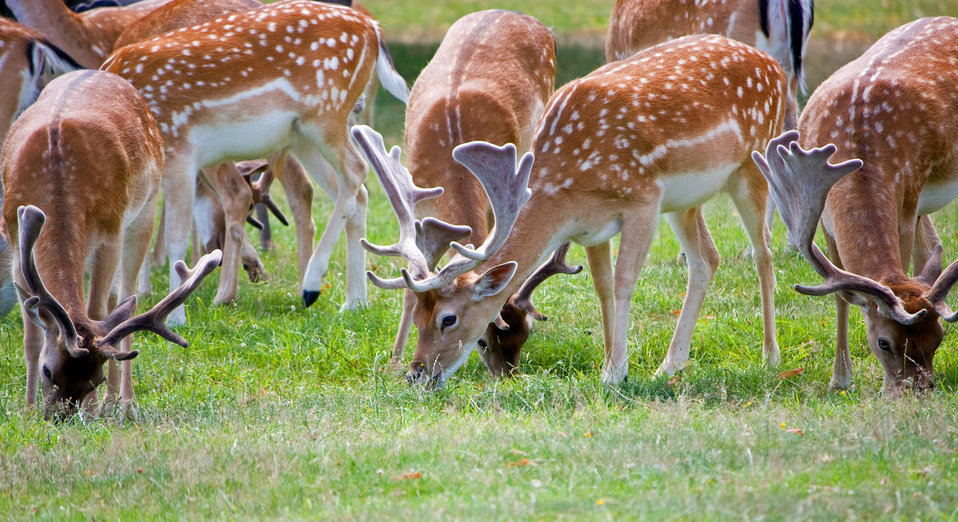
Deer herd close-up

Herd of roe deer in close-up.